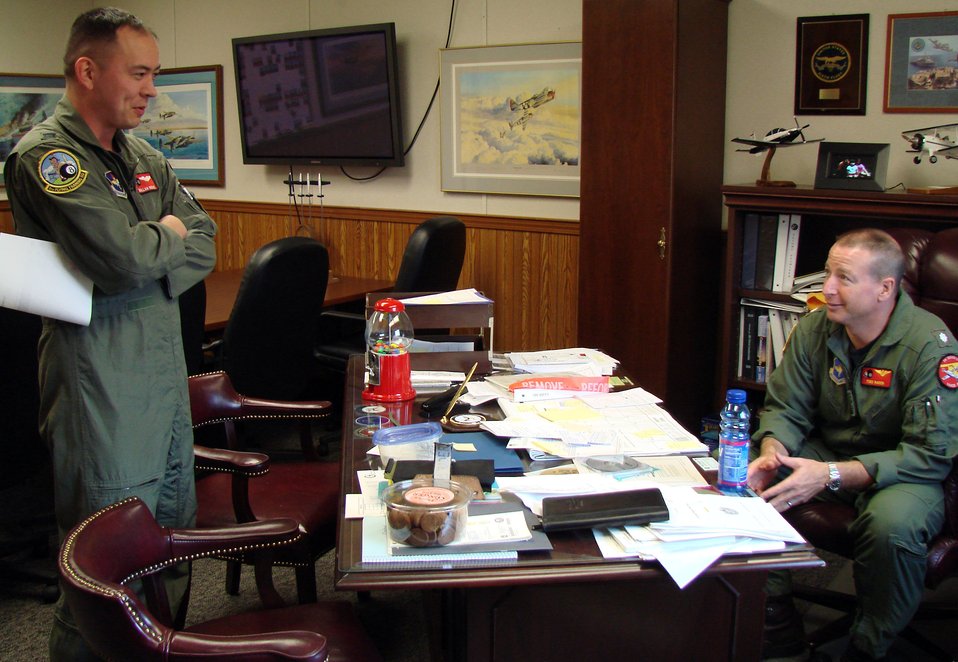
Navy officer leads AF squadron, celebrates Navy birthday

Air Force Capt. Dallan Reese (left) discusses student training with Navy Cmdr. Todd Rader Oct. 4. Commander Rader is the 8th Flying Training Squadron commander at Vance Air Force Base, Okla. He took command of the 8th FTS in June and carries on a tradition of having a Navy officer rotate every other year as commanding officer of the unit. Captain Reese is an 8th FTS instructor pilot.